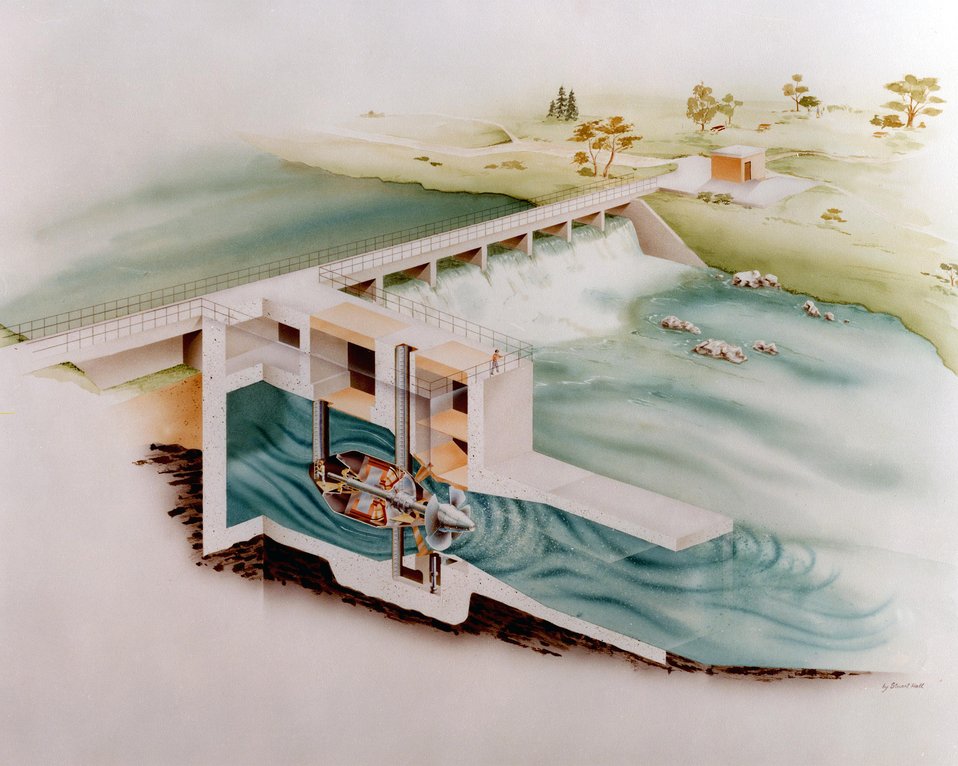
ARTIST'S CUTAWAY VIEW OF UPPER PLANT POWER HOUSE AND BULB TURBINE.

THE DEMONSTRATION PROJECT AT IDAHO FALLS CONSISTS OF REDEVELOPING THE CITY'S THREE EXISTING POWER PLANT SITES. THESE THREE SITES, ALONG THE SNAKE RIVER, ARE GOING TO CONTAIN LOW-HEAD HYDROELECTRIC PLANTS. A 7.2 MWE BULB TURBINE-GENERATOR WILL BE INSTALLED ON EACH SITE. ONE SITE WILL ALSO MAINTAIN TWO EXISTING 1.875 MWE UNITS AS STANDBY OR PEAK FLOW UNITS. PRIOR TO THIS PROJECT, BULB TURBINES HAD ONLY BEEN USED FOR HIGH POWER GENERATION. THIS PROJECT IS GOING TO DEMONSTRATE THAT BULB TURBINES CAN BE USED ECONOMICALLY FOR SMALL-SCALE, LOW-HEAD HYDROELECTRIC POWER GENERATION. THE PROJECT IS ALSO GOING TO DEMONSTRATE THAT THIS TECHNOLOGY CAN BE USED IMMEDIATELY, IT DOES NOT NEED EXTENSIVE RESEARCH AND DEVELOPMENT.